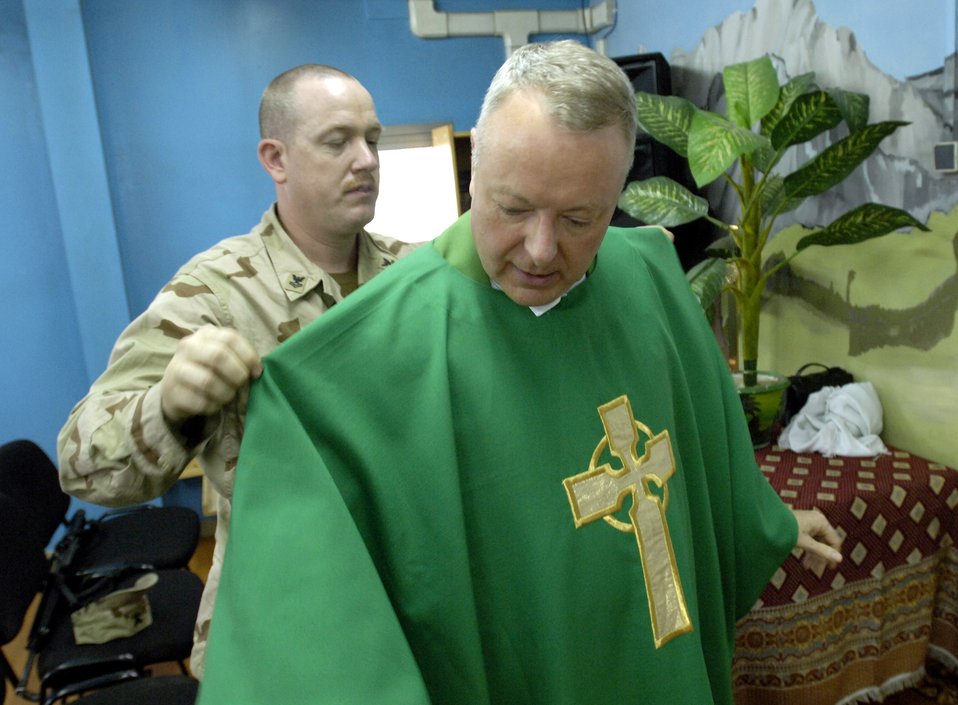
Chaplain shares faith in Afghanistan

Navy Petty Officer 2nd Class Fred Hays assists Chaplain (Lt. Col.) Michael Weber into his vestments prior to the Catholic daily mass July 23 at Camp Eggers in Kabul, Afghanistan. Besides providing the various chaplain services to the joint military community at Camp Eggers, Chaplain Weber also serves as a mentor to the Afghan Religious and Cultural Affairs officers, who are the Afghan equivalent to U.S. military chaplains. Petty Officer Hays is a religious program specialist.